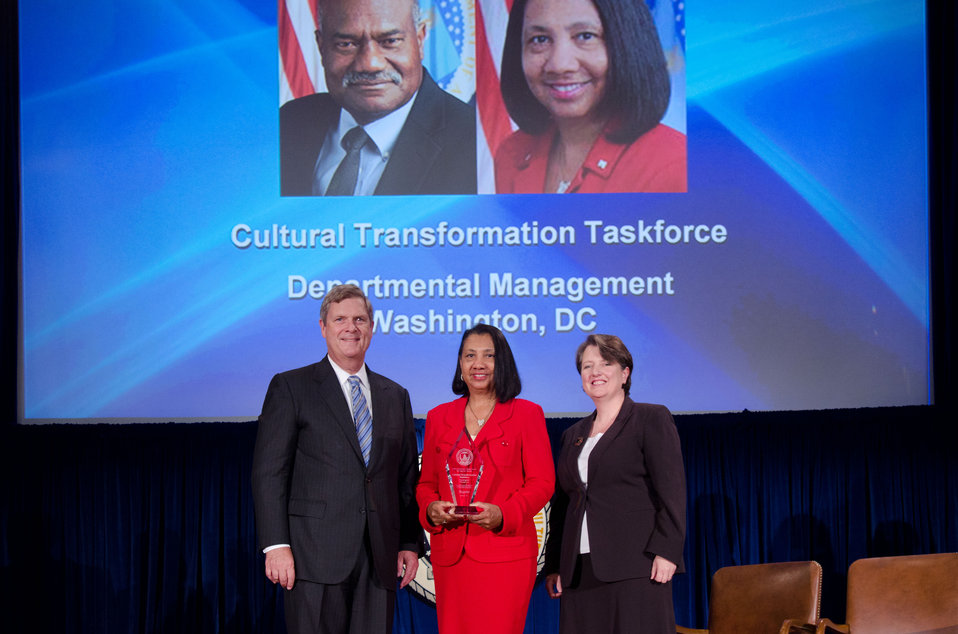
Agriculture Secretary Tom Vilsack (l) and Deputy Secretary Kathleen Merrigan (r), presents the Award to Cultural Transformation Taskforce, Departmental Management, Washington, DC. Pearlie S. Reed & Alma C. Hobbs, Group Leaders. For your unwavering service and commitment to changing the culture of USDA. On Wednesday, September 14, 2011 in the Jefferson Auditorium at the US Department of Agriculture in Washington, DC.